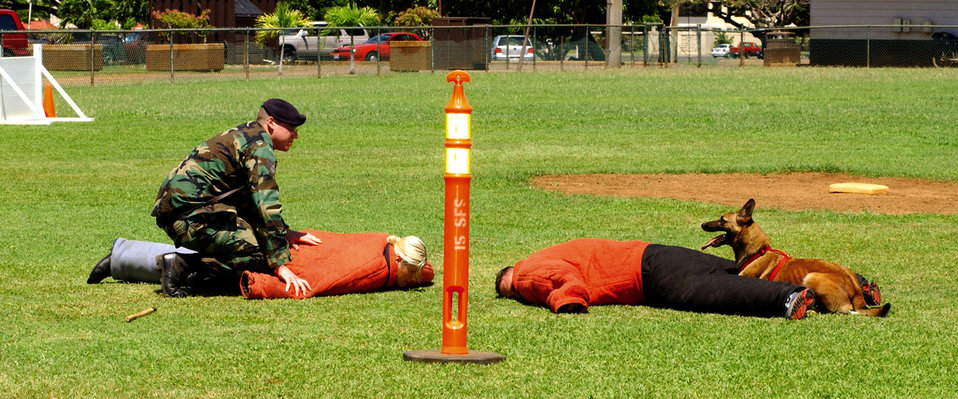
Ruff competition

HICKAM AIR FORCE BASE, Hawaii -- Elra, a military working dog, keeps a watchful eye on both decoys as his handler, Staff Sgt. Matthew Claxton, searches the suspects. Sergeant Claxton and Elra were named